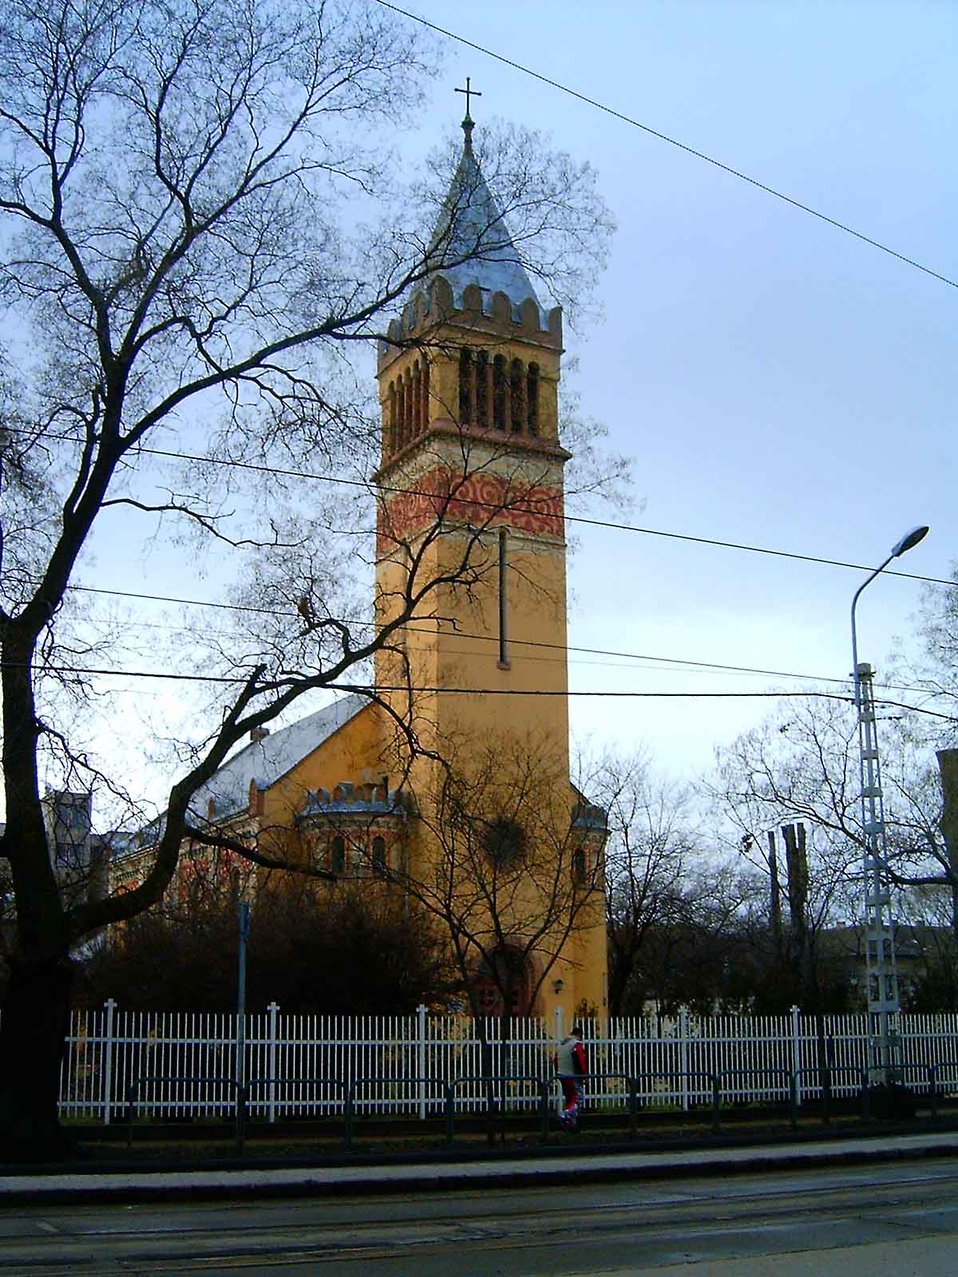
Magyar: Kispesti Evangélikus Templom Deutsch: Evangelische Kirche Kispest (19. Bezirk in Budapest) Protestant church in Kispest (19th district in Budapest)